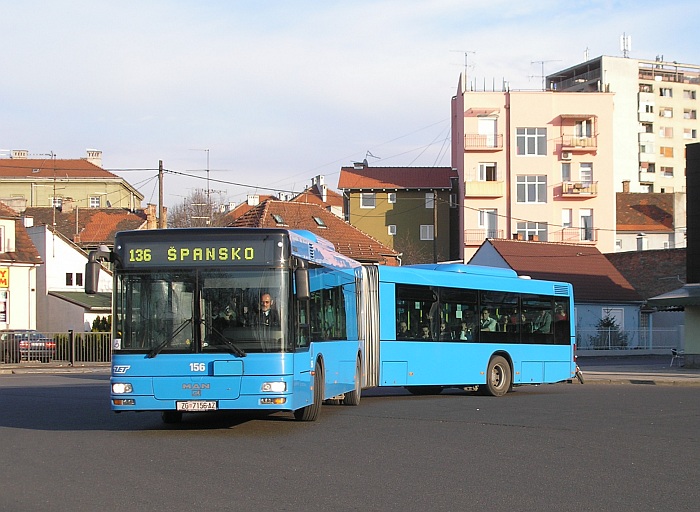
Bus 136